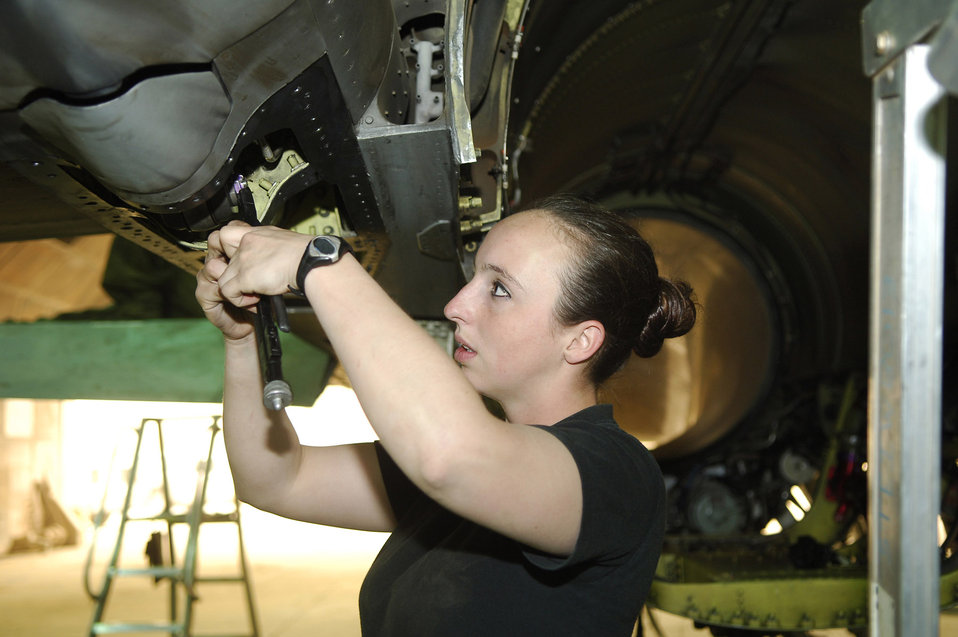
Keeping them flying...

Airman Crystal Carper tightens a screw in one of the panels of an F-16 Fighting Falcon at Balad Air Base, Iraq, April 19. Airman Carper is an F-16 crew chief and deployed from Spangdahlem Air Base, Germany.